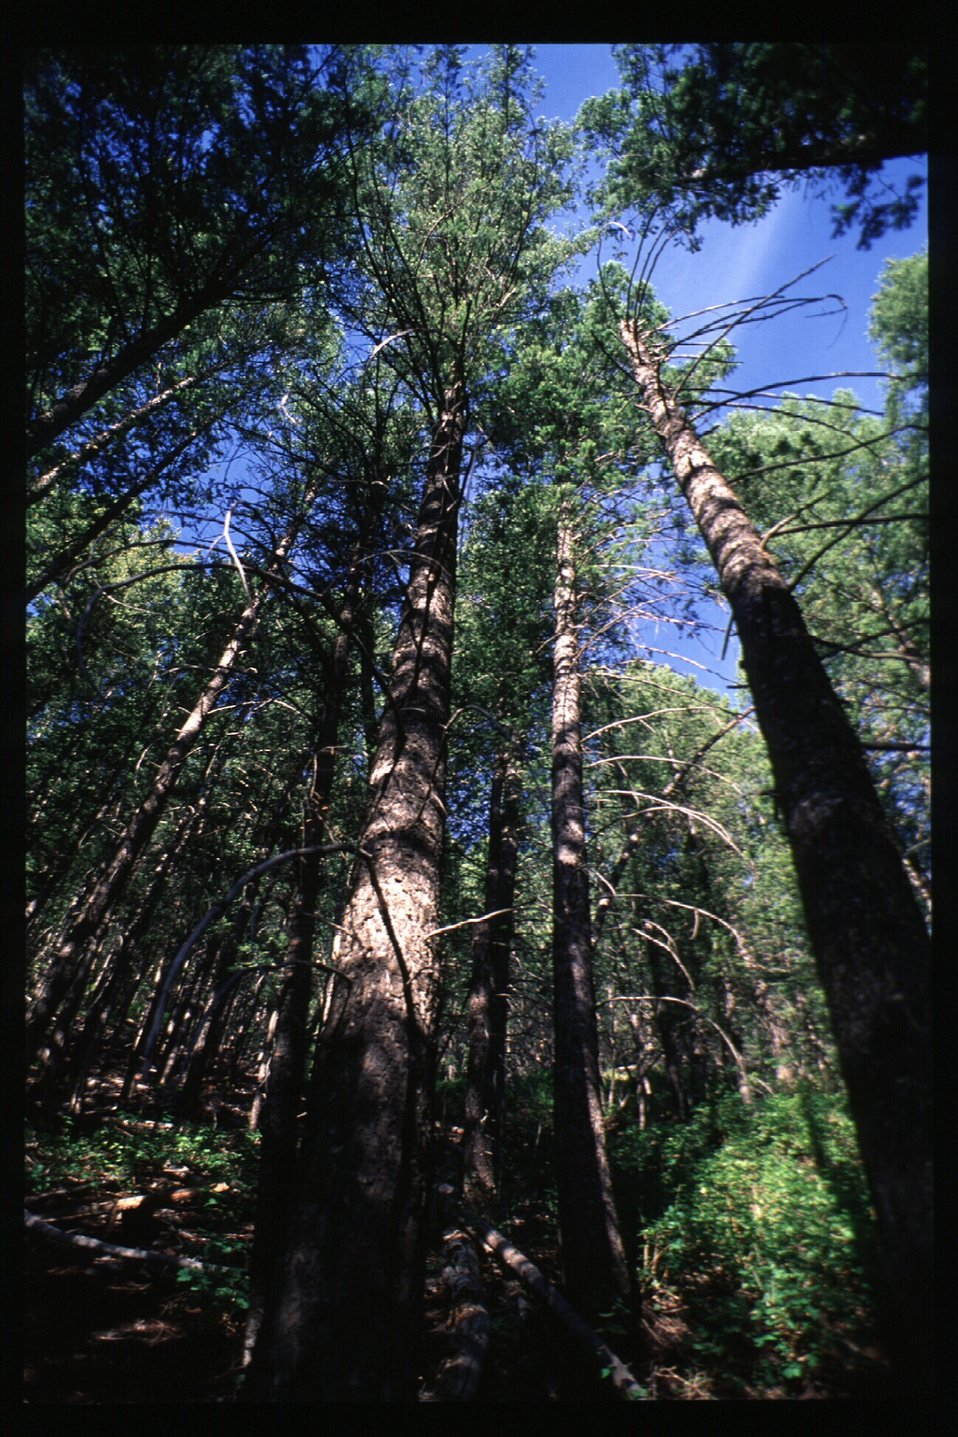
Recreation Scenic Biker Shoshone Field Office USRD Upper Snake River District Bald Mountain Trail Trees